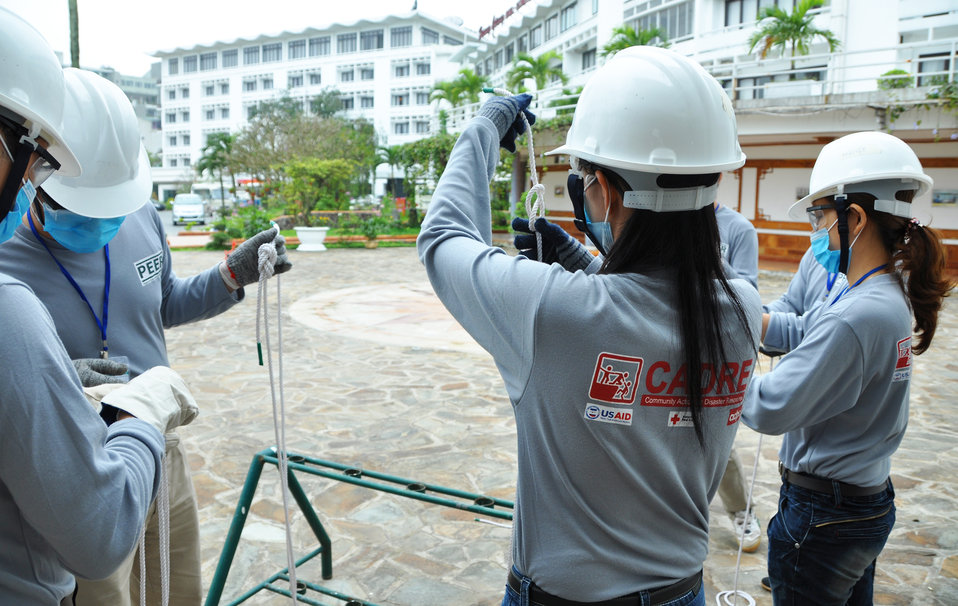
Disaster and Emergency Training Funded by USAID in Hue, Vietnam